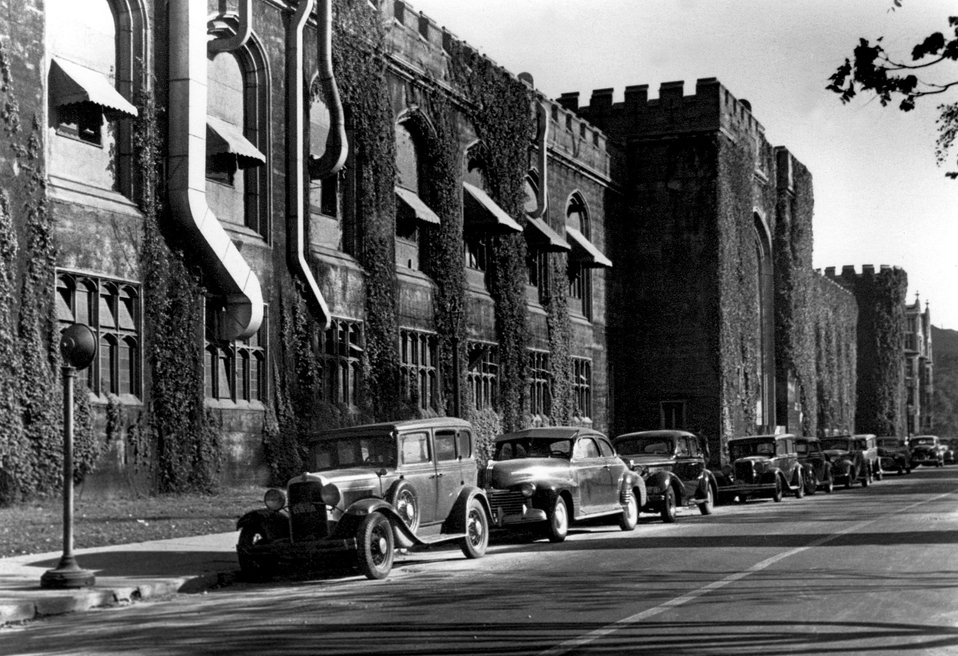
Stagg Field, University of Chicago..